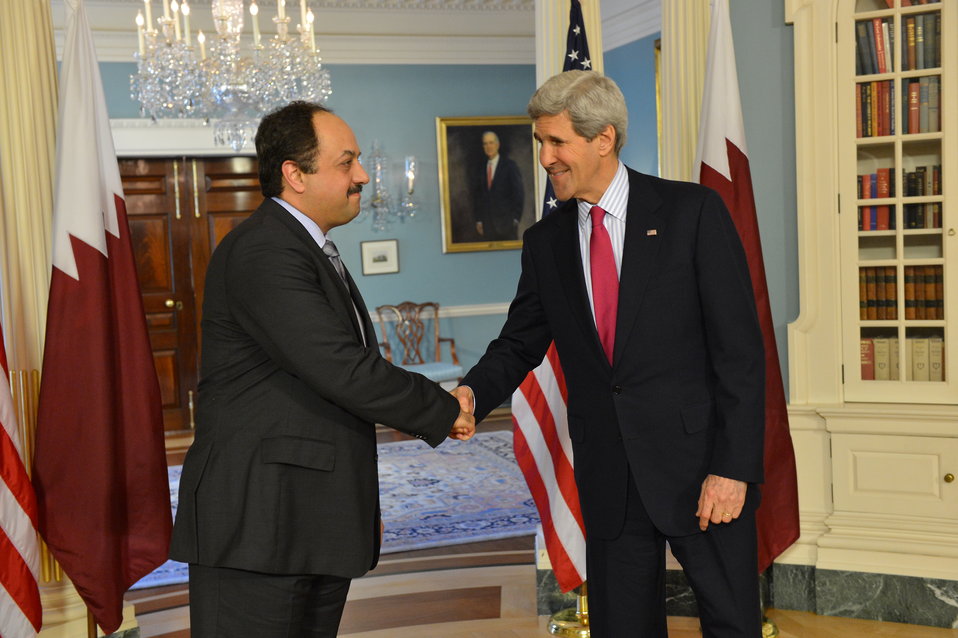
Secretary Kerry Meets With Qatari Foreign Minister Attiya

U.S. Secretary of State John Kerry meets with Qatari Foreign Minister Khalid Al Attiya at the U.S. Department of State in Washington, DC on April 11, 2014.